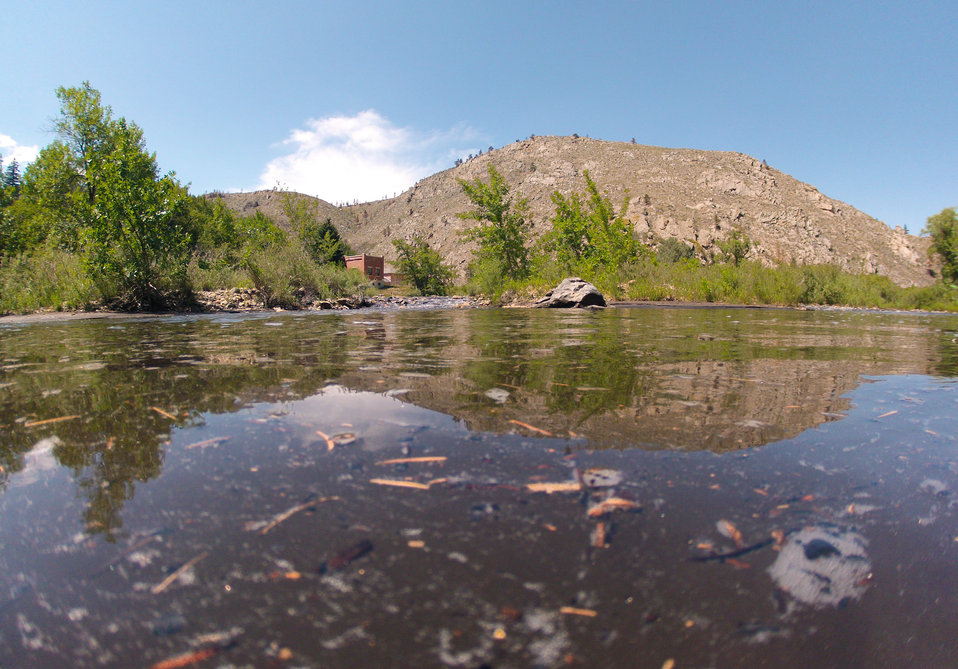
A confluence of two tributaries, the Cache la Poudre and the North Fork of the Cache la Poudre, near Seaman Reservoir, 60 miles north of Denver, Colorado on Friday, July 20, 2012, have been transformed from clear mountain waters to a nearly black water, heavily laden with ash, silt, and burnt debris that was recently washed down mountainsides by thunderstorms. The mountainsides were burned by the Hewlett Gulch Fire (May 14, 2012), in the Poudre Canyon area. At its peak more than 400 firefighters were battling fires pushed by 50 mph winds. When the last embers were cooled, more than 12-square miles lay blacked at a cost of approximately 3.2 million dollars. The aerial distribution of straw has successfully kept nearby Seaman Reservoir clean for the drinking water of the City of Greeley. Forest Service lands receive straw, while private and other lands receive a seed mix and straw to promote ground cover plant growth on ash-covered lands. In total, 1,800 tons of straw will be applied during the 14-day operation. One quarter of the cost was paid by the City of Greeley and the U.S. Department of Agriculture funded the remainder.